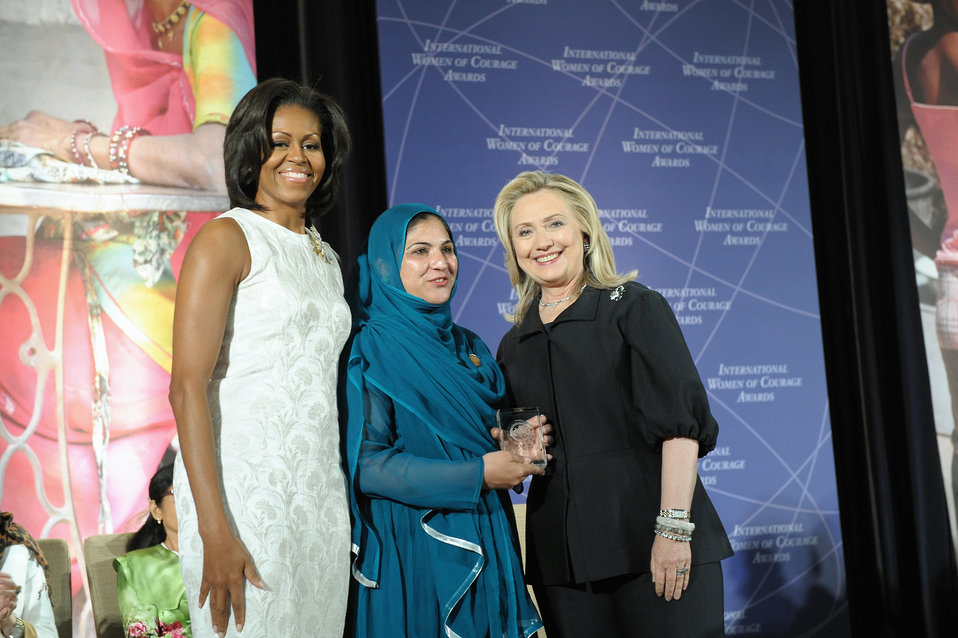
Secretary Clinton and First Lady Obama With 2012 IWOC Award Winner Shad Begum of Pakistan

U.S. Secretary of State Hillary Rodham Clinton, right; and First Lady Michelle Obama, left; pose for a photo with 2012 International Women of Courage (IWOC) Award Winner Shad Begum of Pakistan, at the U.S. Department of State in Washington, D.C., on March 8, 2012.